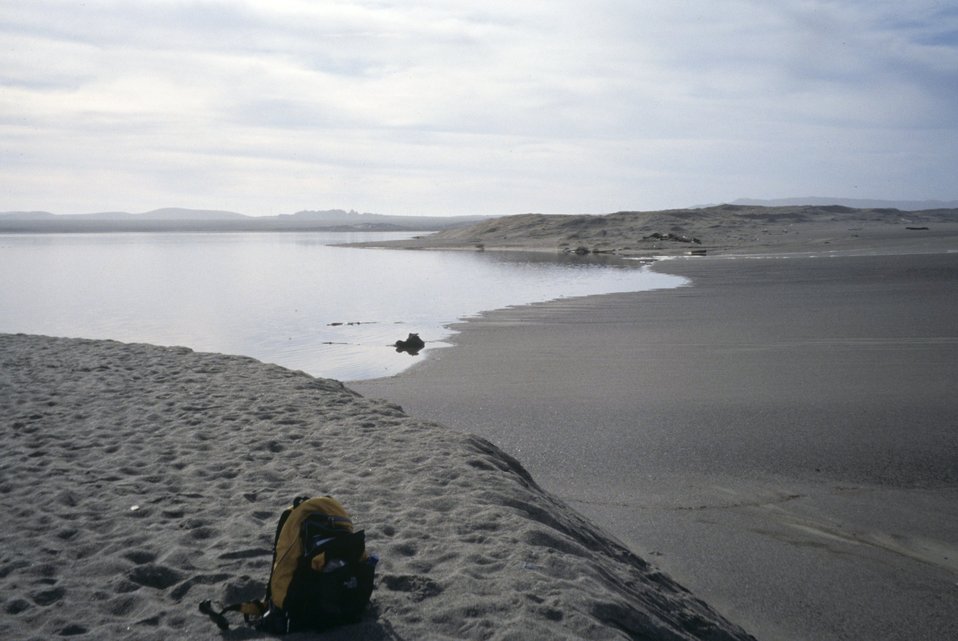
Point Reyes Great Beach